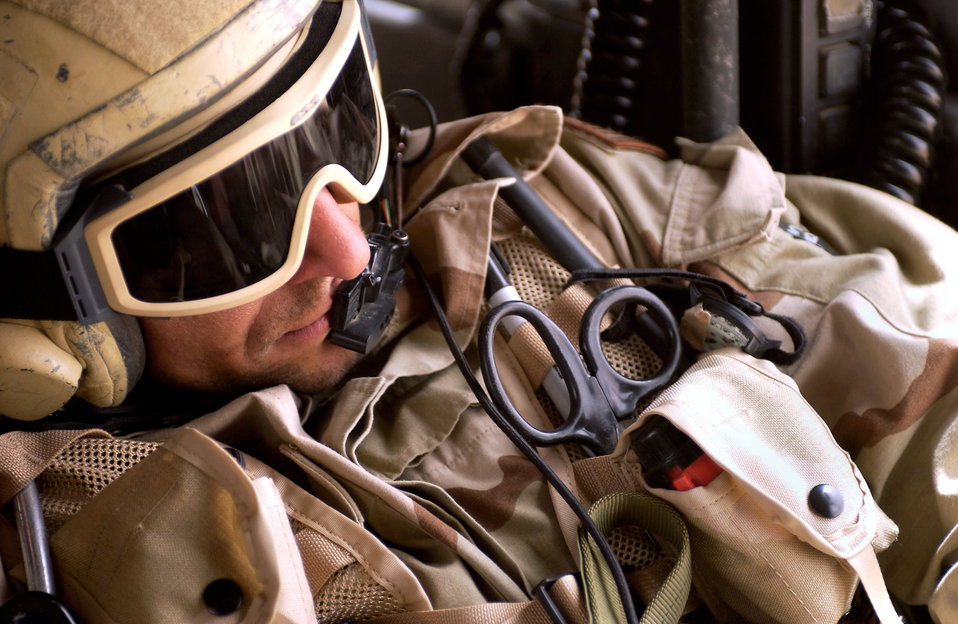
PJ on the prowl

OPERATION IRAQI FREEDOM -- A Pararescueman from the 301st Rescue Squadron scans the Iraqi desert April 6, 2003 during a mission at a forward deployed location in southern Iraq during Operation Iraqi Freedom.